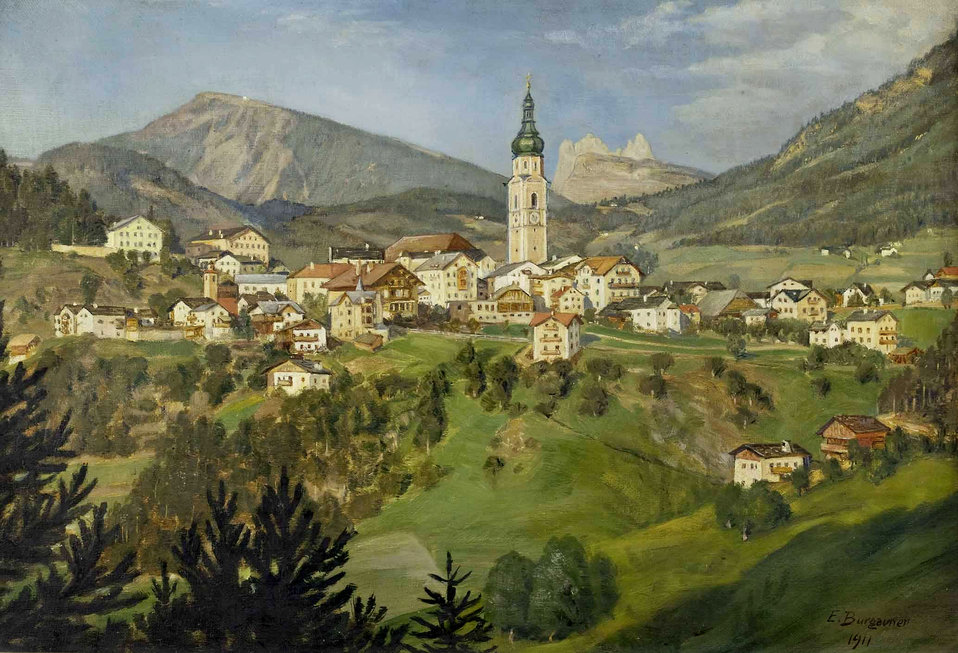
Deutsch: Kastelruth im Jahr 1911 in einem Ölgemälde des Eduard Burgauner, ca. 38 x 55 cm Kastelruth, oil painting on canvas by Eduard Burgauner AD 1911, ca. 38 x 55 cm